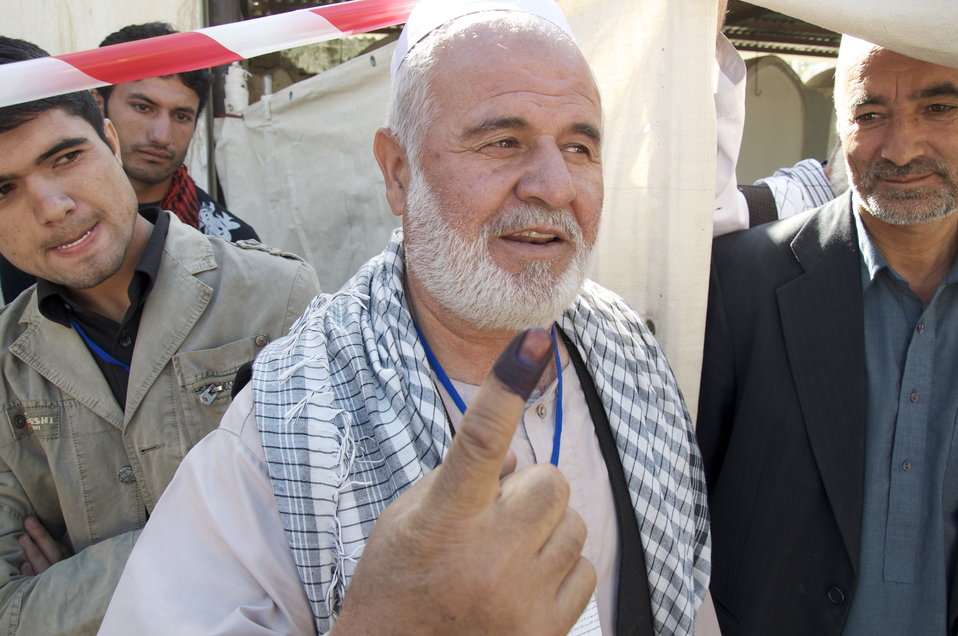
Proud Voter